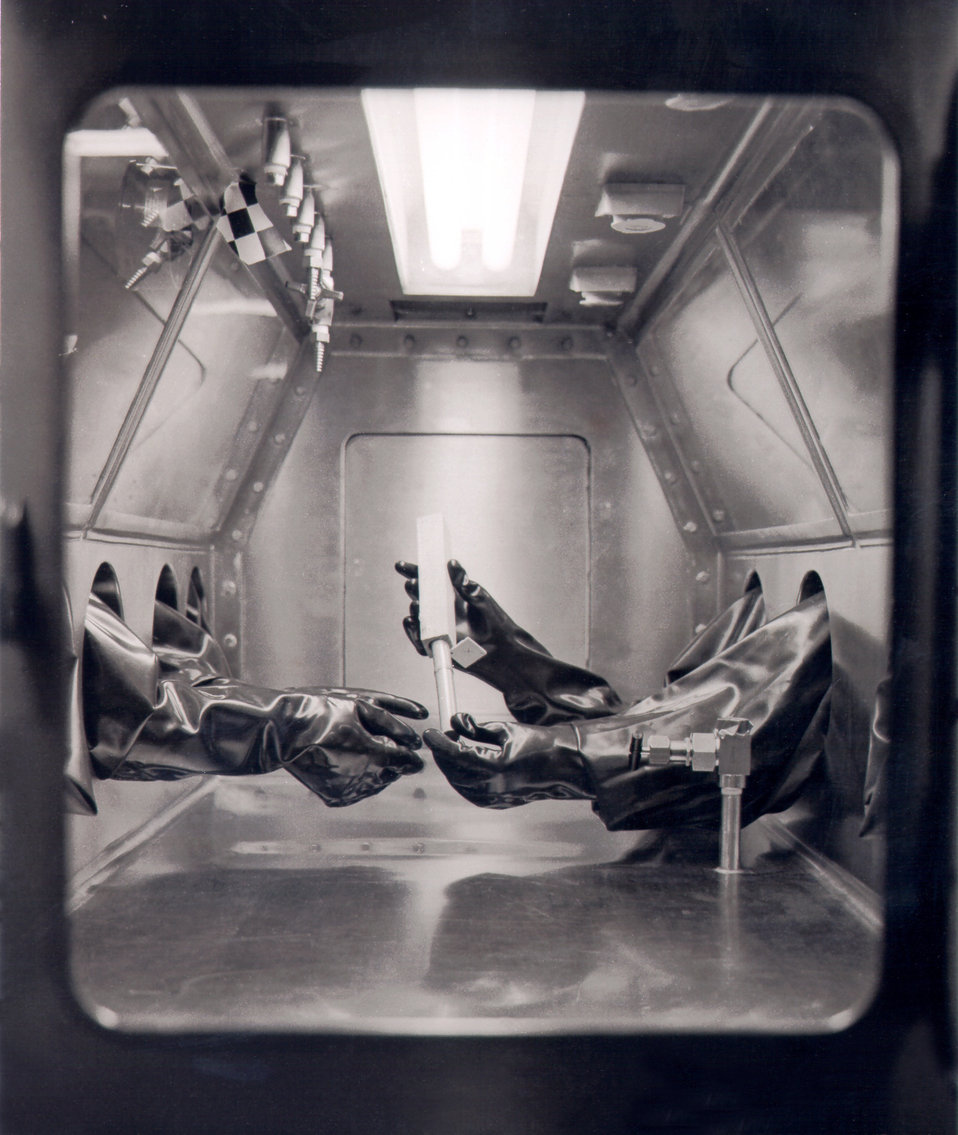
This 1978 image depicts what at that time was the CDC's Biocontainment Laboratory facility.